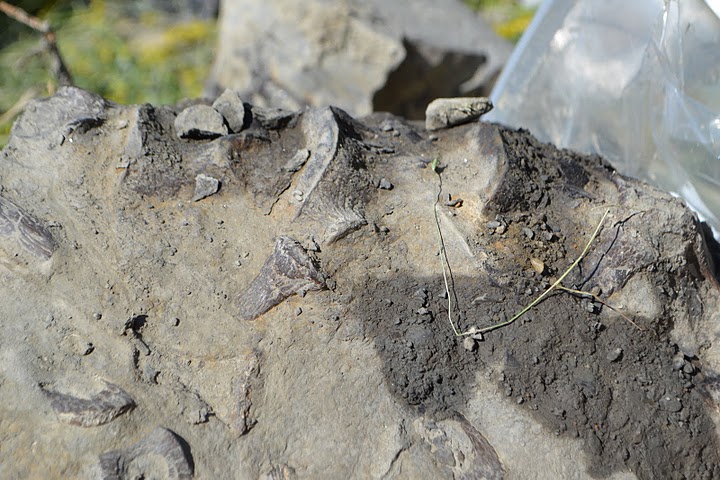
Plesiosaur Vertebrae

The fragments of bone protruding from the top edge of this piece of shale are several plesiosaur vertebrae.